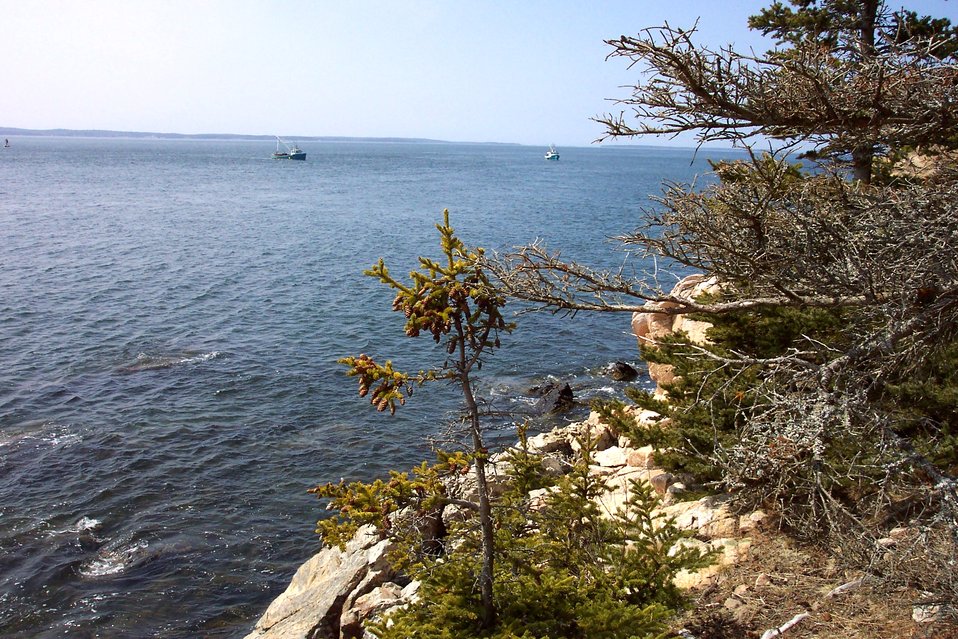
Lobster boats working off of Bass Harbor Head.